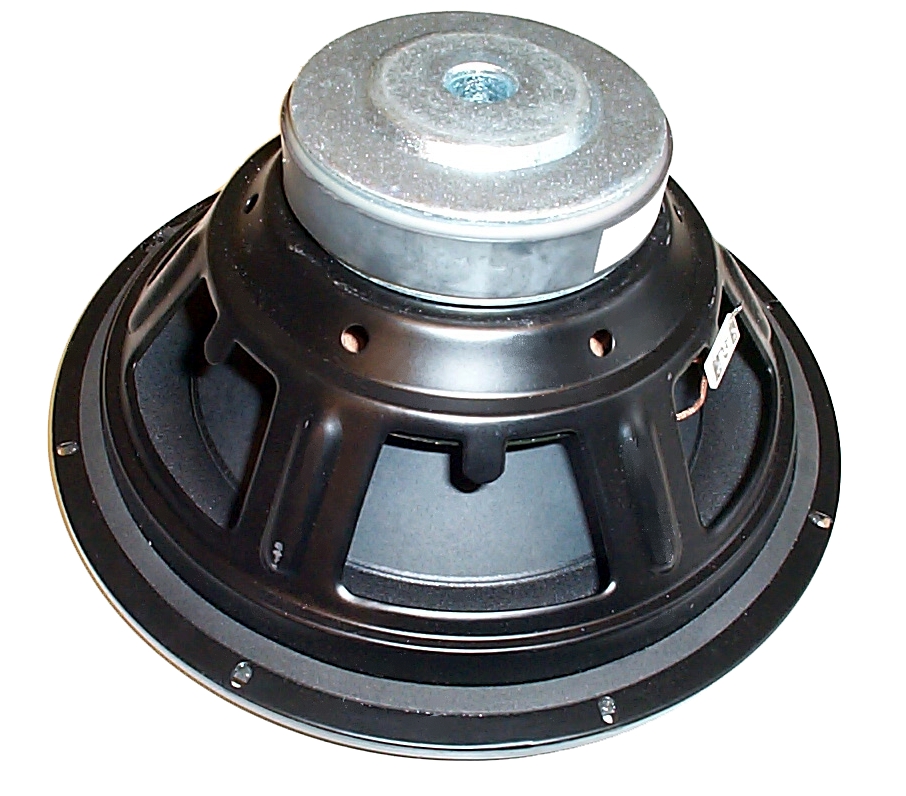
12' Loudspeaker